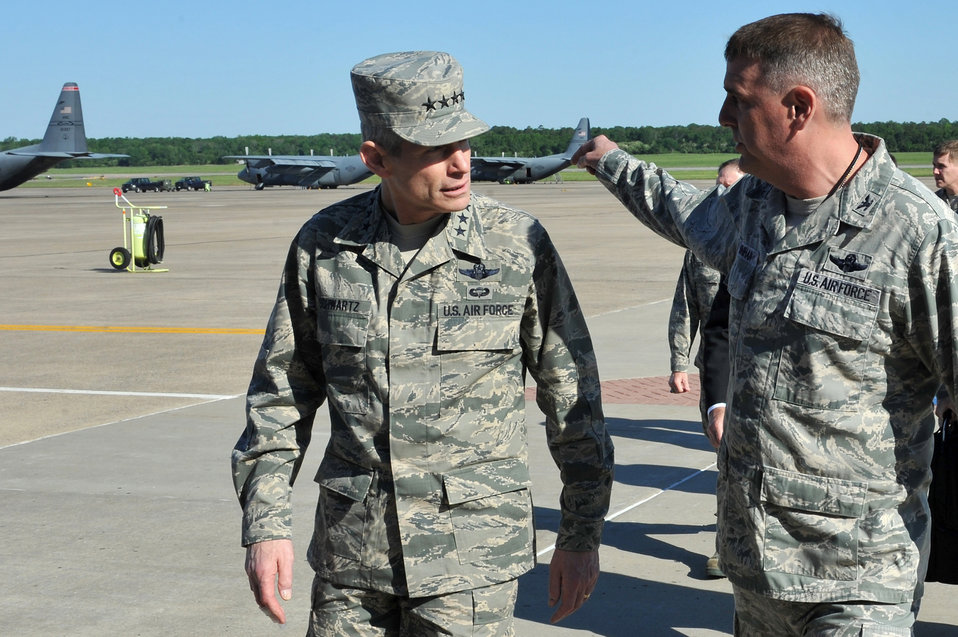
CSAF addresses AF issues, surveys tornado damage at Little Rock AFB

Air Force Chief of Staff Gen. Norton Schwartz talks with Col. Michael Minihan May 4, 2011, at Little Rock Air Force Base, Ark. General Schwartz was previously assigned to Little Rock AFB during his C-130 Hercules initial-qualification training and as a C-130E/H flight examiner. Colonel Minihan is the 19th Airlift Wing commander.